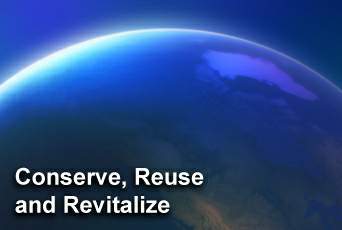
Conserve, Reuse and Revitalize

April 22 is Earth Day. Through the use of pollution prevention concepts like reduce, reuse, recycle at bases worldwide, the Air Force is winning today's fight with green solutions that support and enhance operations while protecting the environment.